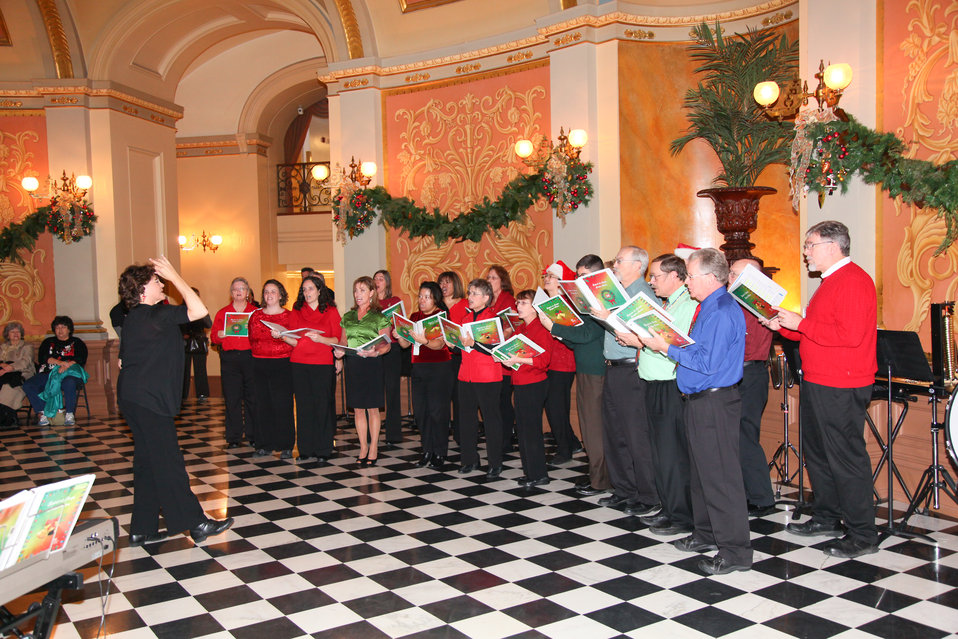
Corps Aliers at the State Capitol

SACRAMENTO, Calif. (Dec. 14, 2010) - Lynne Erickson (left), with the Sacramento District's resource management office, leads the singing group Corps Aliers at the California State Capitol rotunda here with an a cappella performance Dec. 14.